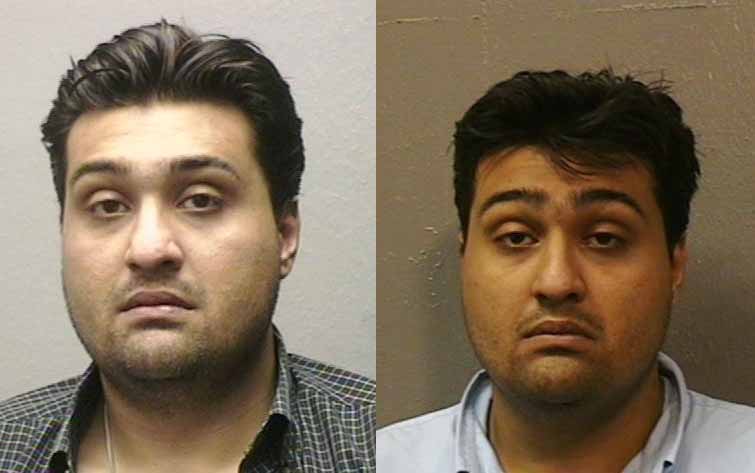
Facial Recognition Software

In NIST's one-to-many tests of facial recognition software, algorithms attempt to match an unknown image such as the one on the left to a different image of the same individual (right) in a large collection of 1.6 million known images.